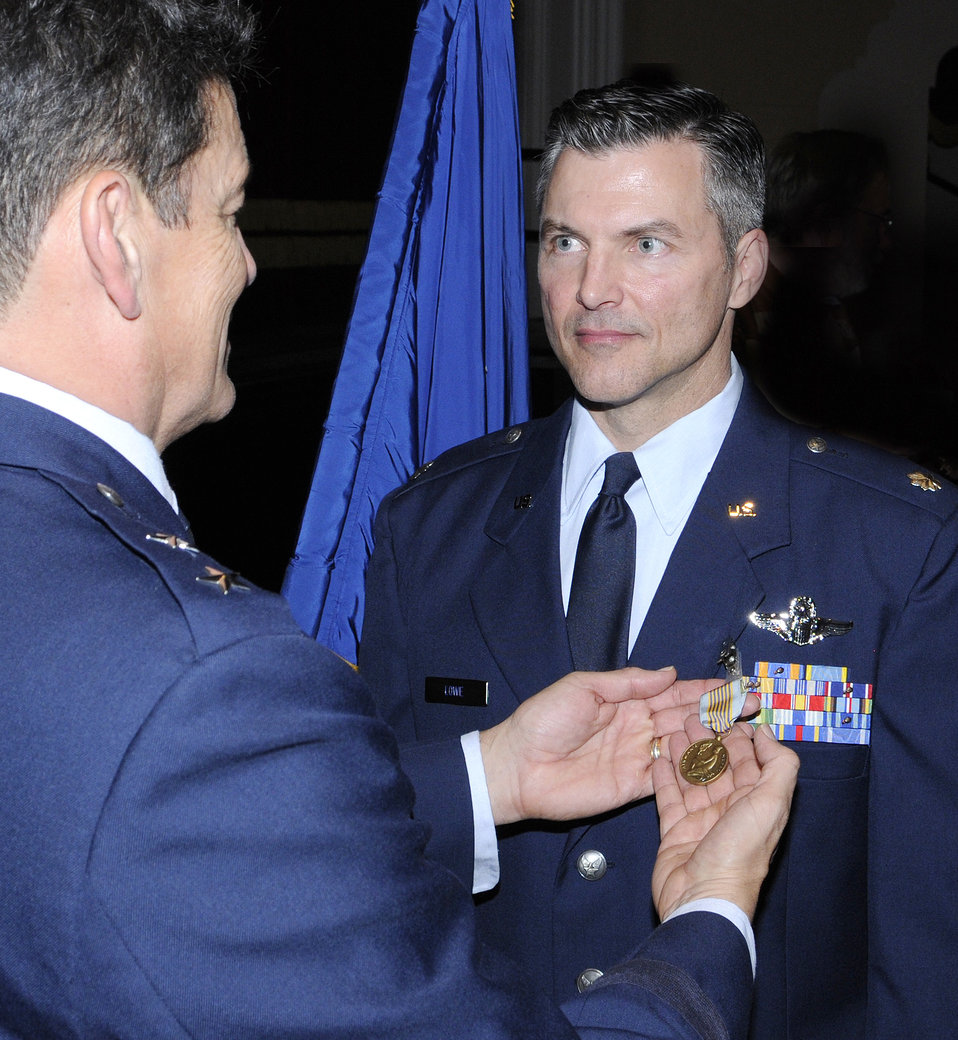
Airman's Medal presentation

Maj. Gen. Frank Padilla presents the Airman's Medal to Lt. Col Richard L. Lowe at a ceremony Dec. 10, 2010, at Randolph Air Force Base, Texas. Colonel Lowe distinguished himself by heroism involving voluntary risk of life following the crash of Continental Airlines Flight 1404 Dec. 20, 2008, at Denver International Airport. General Padilla is the 10th Air Force commander at Air Force Reserve Command Joint Reserve Base at Fort Worth, Texas. Colonel Lowe is a 340th Reserve Flight instructor.